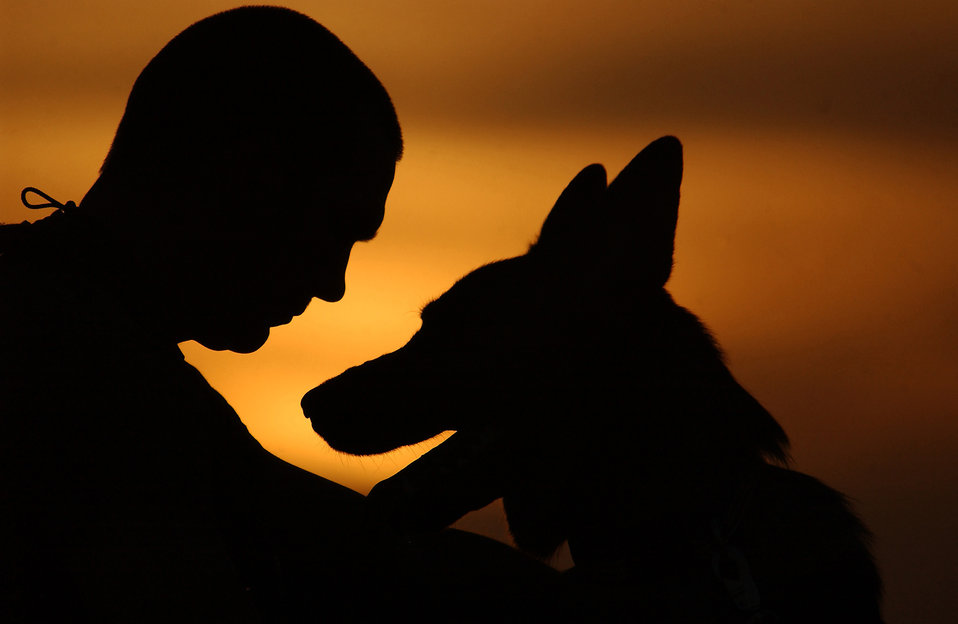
Heroes

OPERATION IRAQI FREEDOM -- Staff Sgt. Chad Reemtsma and Hero from the 363rd Expeditionary Security Forces Squadron enjoy some downtime April 8 while waiting for vehicles to search at a forward-deployed location supporting Operation Iraqi Freedom.